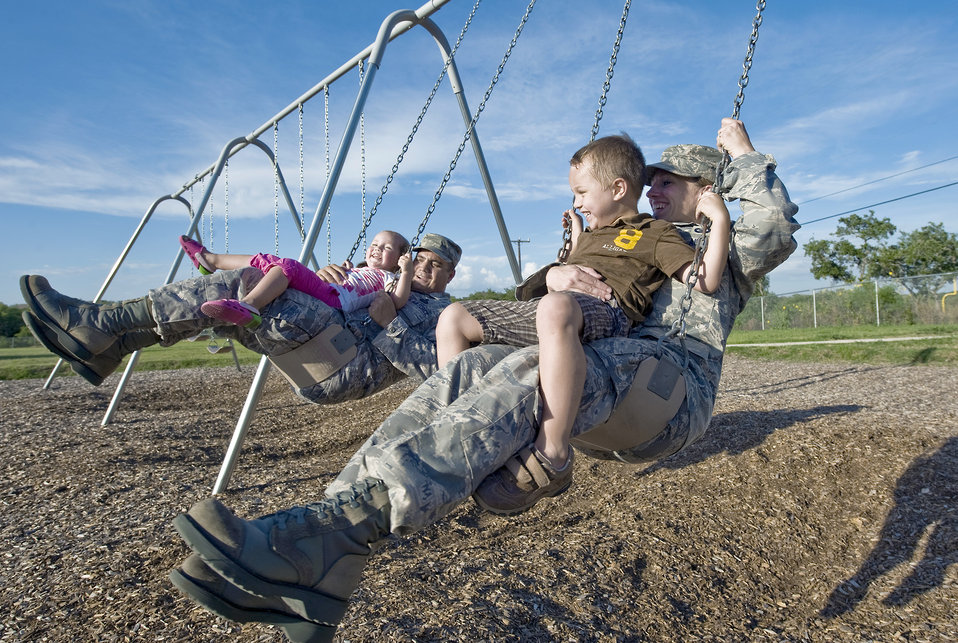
Know before you go

Master Sgt. Roldolfo Gamez and his wife, Tech. Sgt. Christina Gamez, swing with their children at their neighborhood park after work.